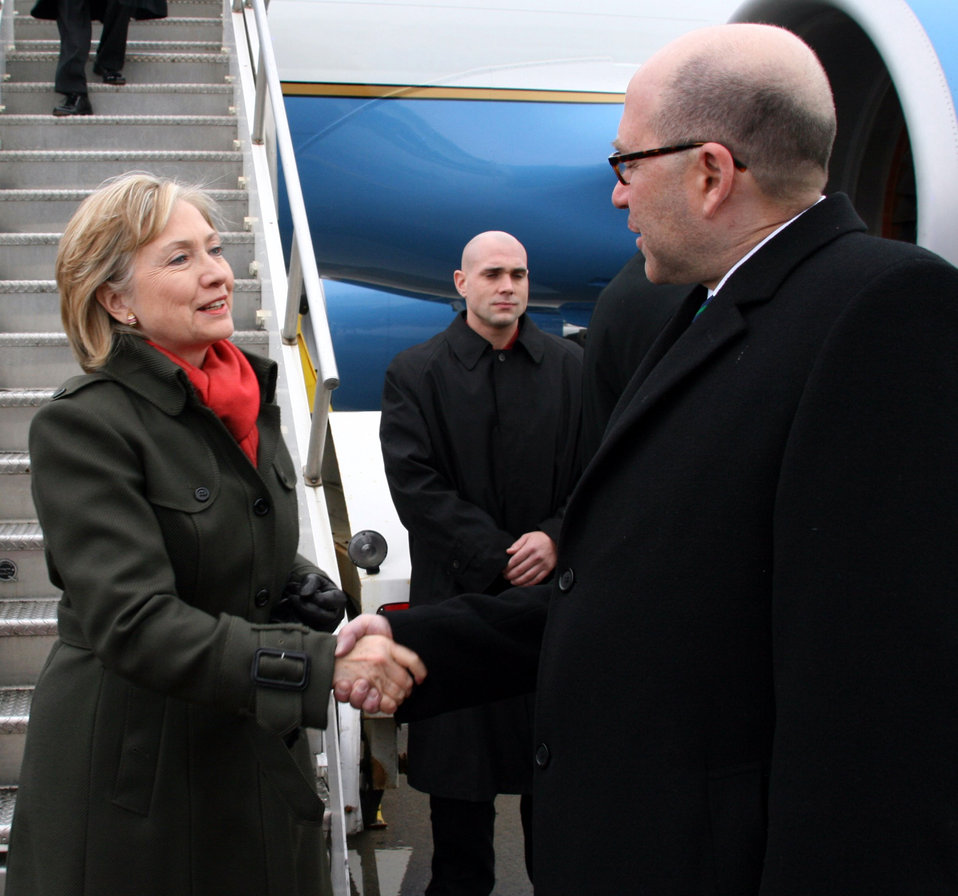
Secretary Clinton in Montreal

U.S. Secretary of State Hillary Rodham Clinton is welcomed by U.S. Ambassador to Canada David Jacobson upon arrival in Montreal, Canada January 25, 2010.